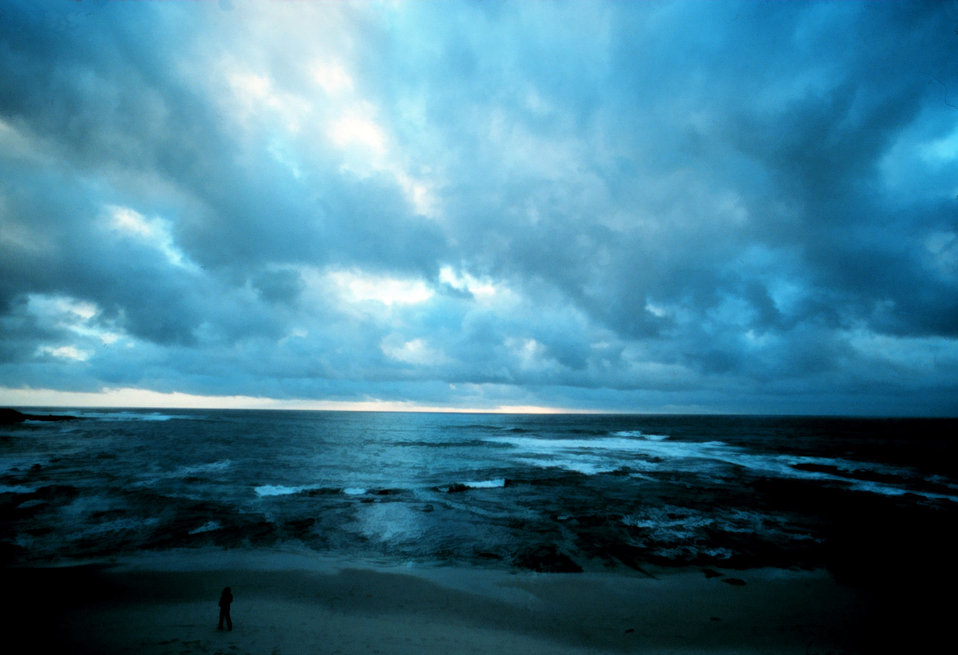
Stratocumulus